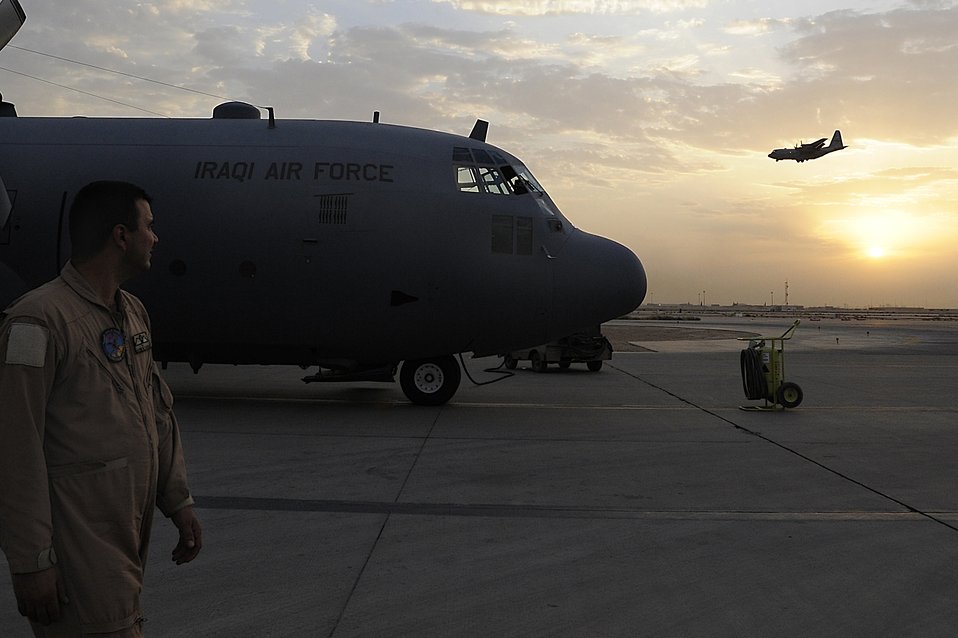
Working by moonlight

An Iraqi airman watches a C-130 land Oct. 11 at Joint Base Balad, Iraq. The airmen were on a cargo resupply mission with members of the U.S. Air Force 370th Air Expeditionary Advisory Squadron. They are assigned to 23rd Squadron, which operates three C-130s used for transporting troops, supplies and distinguished visitors.